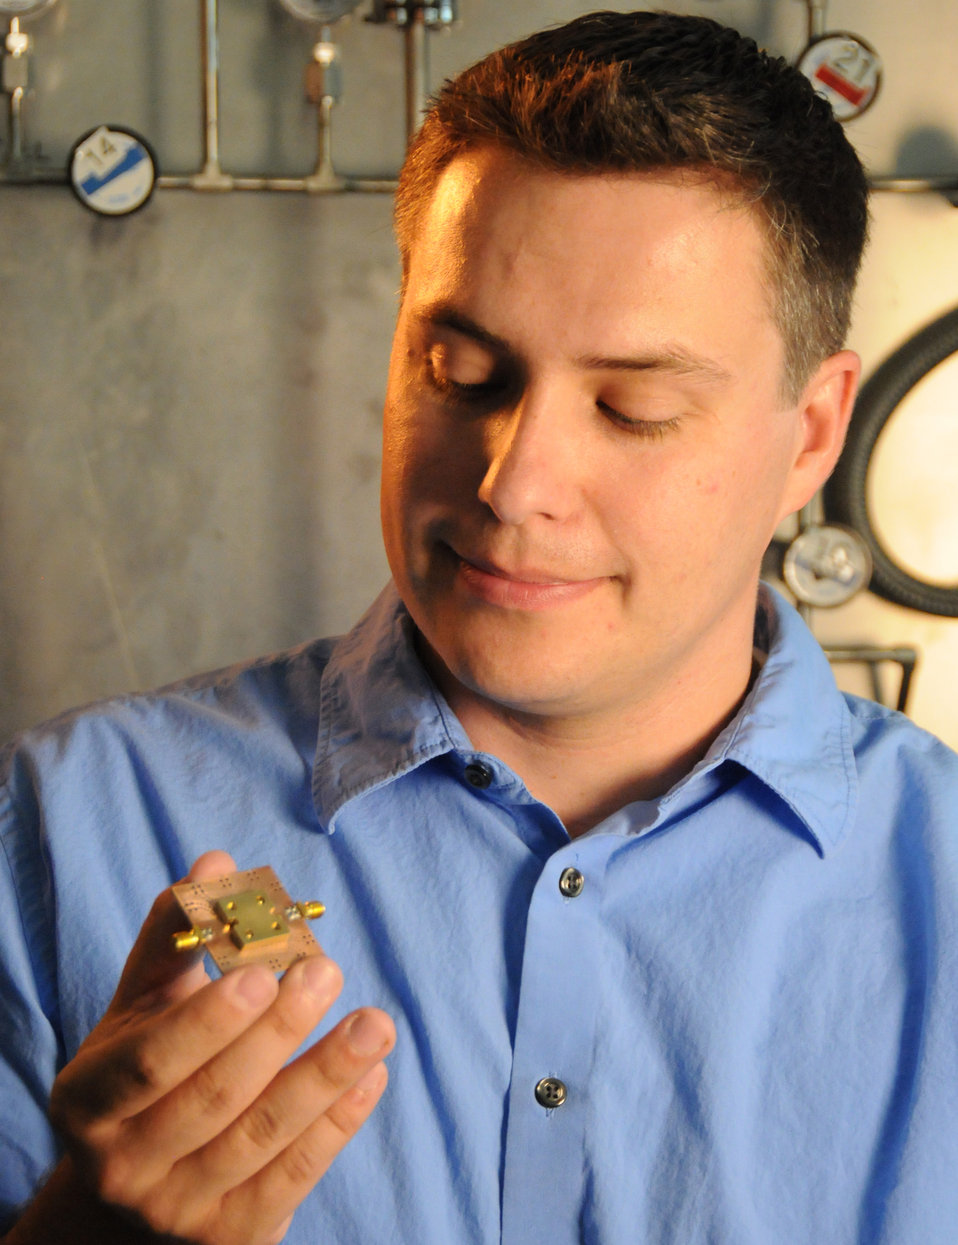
John Teufel; Micro Drum

NIST research affiliate John Teufel, who designed the micro drum, with a chip holder used to contain the drum during experiments.

For more information see the NIST Tech Beat story.